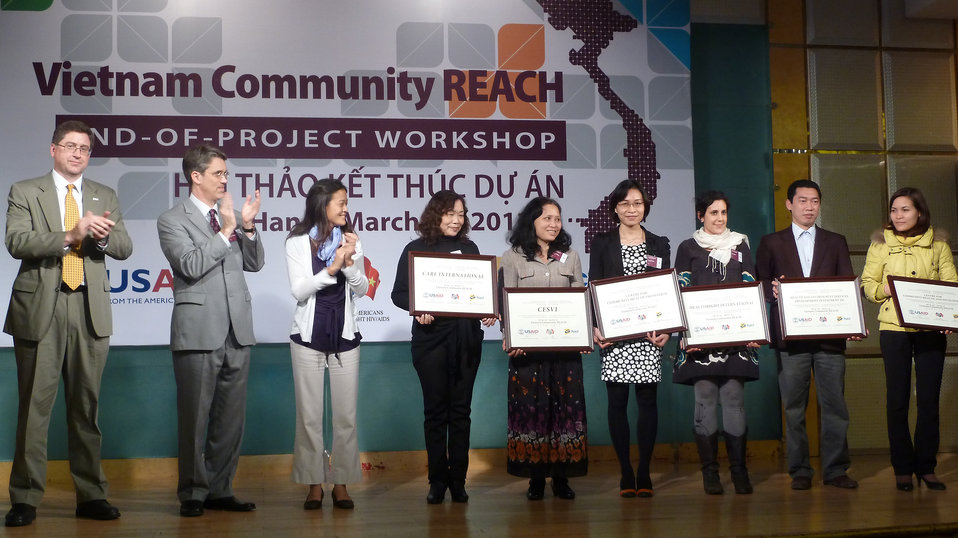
USAID, PEPFAR, and Pact award certificates to local and international partners for their work in addressing HIV in Vietnam

Community REACH project close-out with USAID and implementing partner, Pact